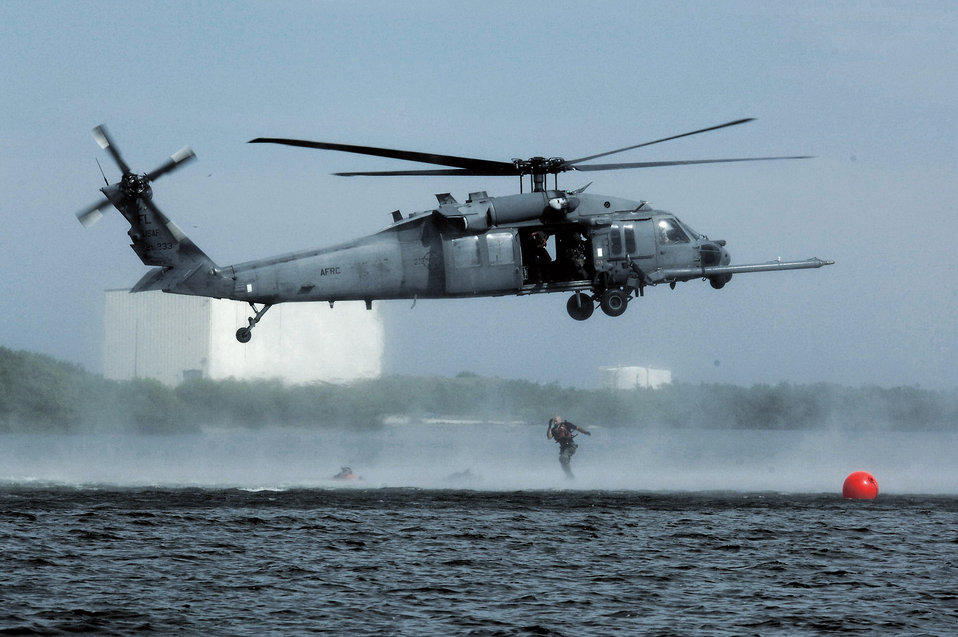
Rescue wing sends replacements to Afghanistan

Air Force Reserve Command Airmen from the 920th Rescue Wing at Patrick Air Force Base, Fla., who maintain and fly the HH-60G Pave Hawk helicopter, are deploying to Afghanistan to support the U.S. Army medical evacuation operation there. Normally involved in combat search and rescue, this will be the first time the unit is involved with medevac missions.